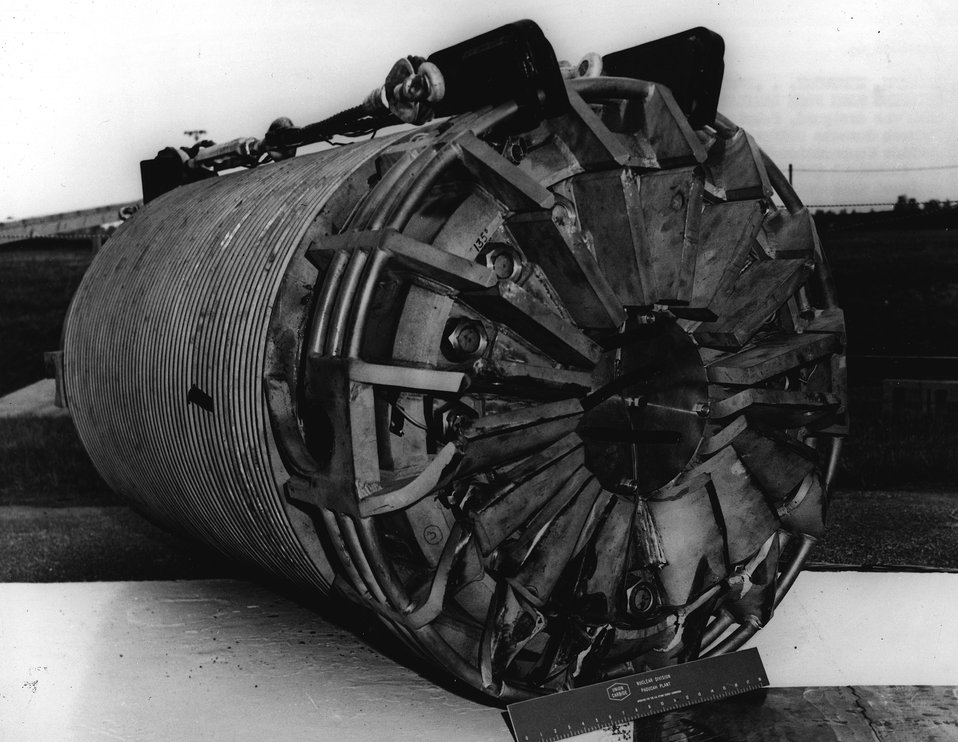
This cask was designed, fabricated, and tested by the Paducah Gaseous Diffusion Plant, operated by Union Carbide Corporation-Nuclear Division, to demonstrate the technical feasibility and economic factors associated with using uranium as the shielding material in irradiated fuel shipping casks. c. 1968